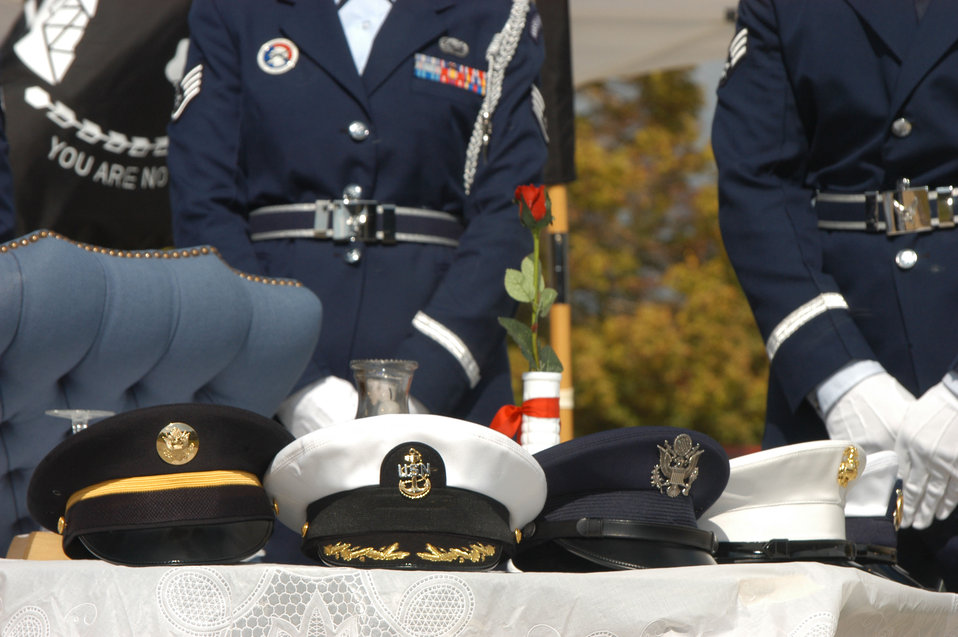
Denver-area units hold POW/MIA Recognition Day vigil

The hats of each branch of the United States armed forces sit atop the POW/MIA table during a Prisoner of War and Missing in Action remembrance ceremony in Denver Sept. 14. The ceremony is part of a 24-hour vigil marking National POW/MIA Recognition Day.